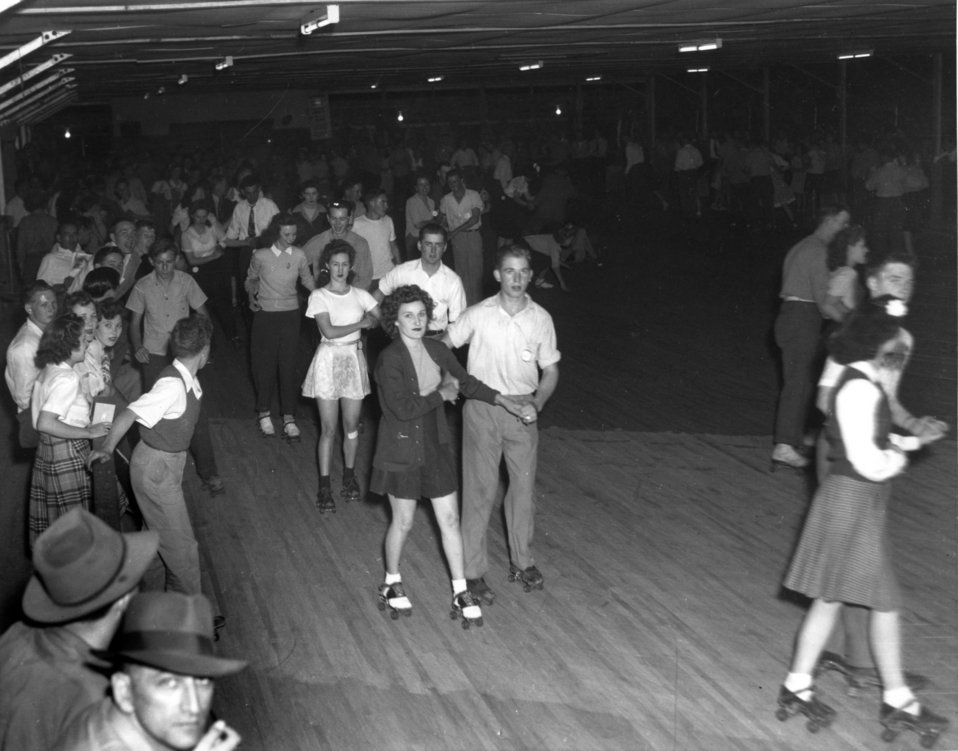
Recreation at Oak Ridge